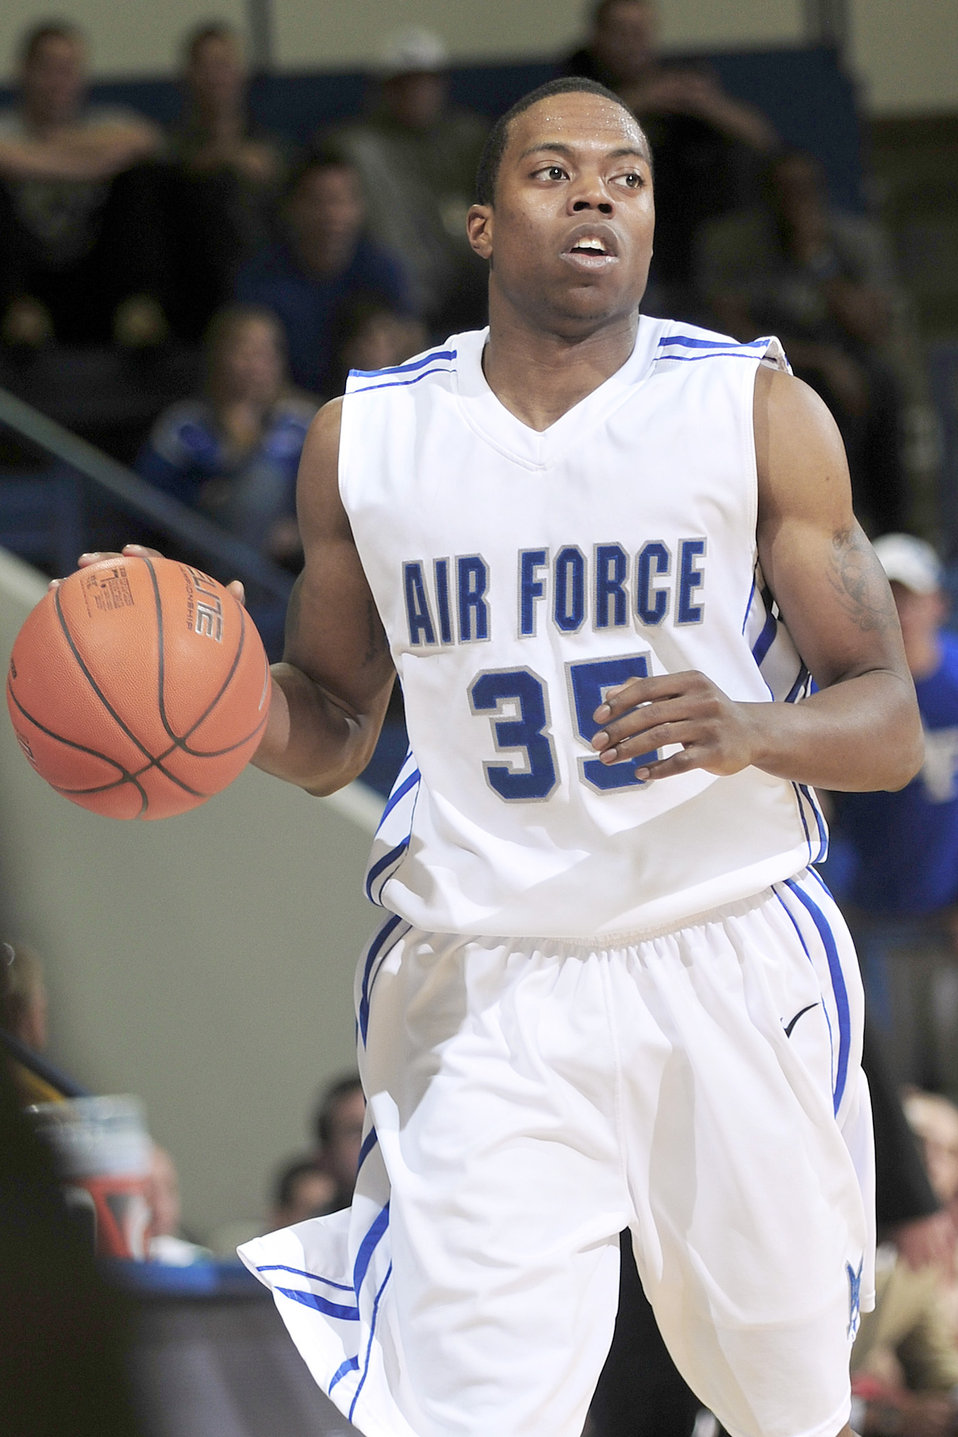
Falcons win home opener

Air Force Academy junior Evan Washington looks for an open teammate during the Falcons Mountain West Conference home opener Jan. 5, 2011, against Utah. Washington dished out a career high 11 assists as the Falcons upset the Utes 77-69 at the Academy's Clune Arena in Colorado Springs, Colo.